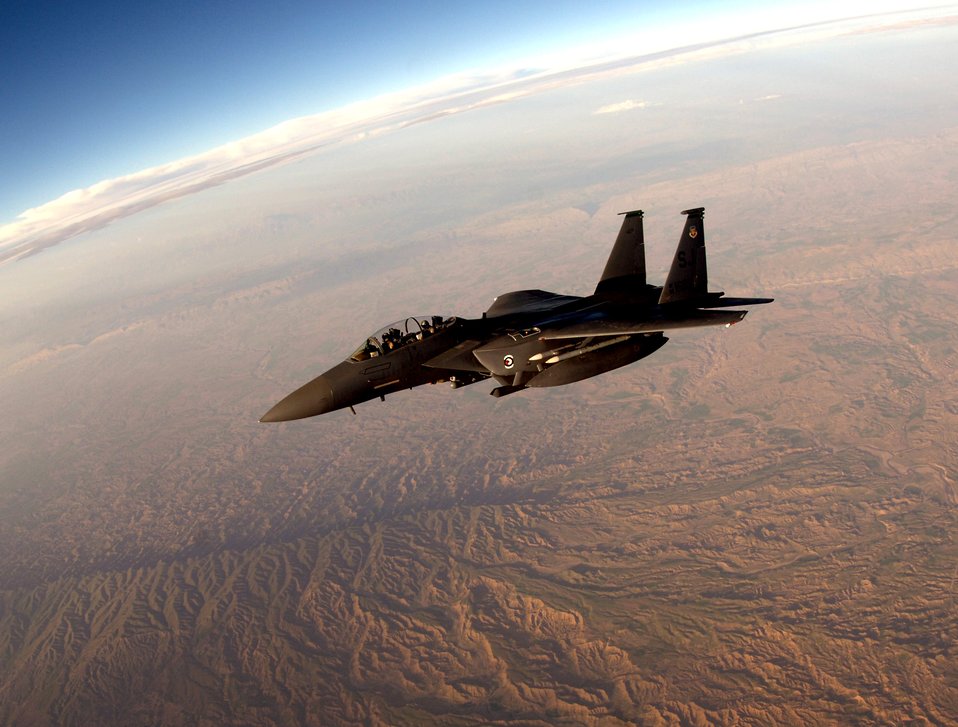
A view to a refuel

An F-15E Strike Eagle breaks away from a KC-135 Stratotanker after refueling over Southwest Asia on Tuesday, April 11, 2006. The F-15E is deployed to the 336th Expeditionary Fighter Squadron from Seymour Johnson Air Force Base, N.C. The KC-135 is deployed to the 340th Expeditionary Air Refueling Squadron from Fairchild Air Force Base, Wash.